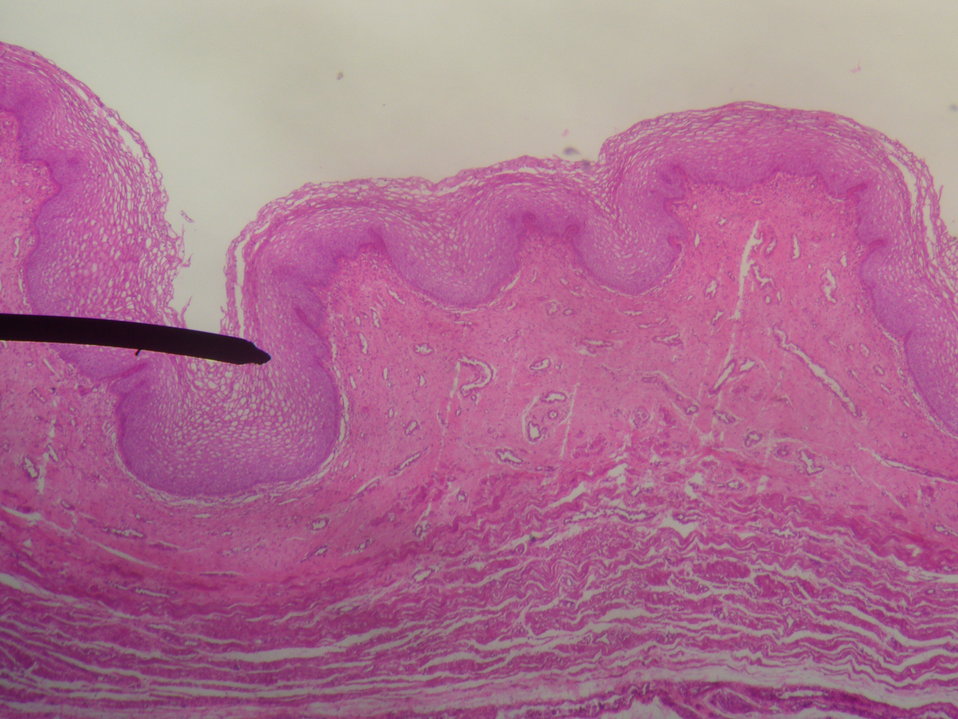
Author's own picture. Digital camera shot though a microscope; human vaginal wall.